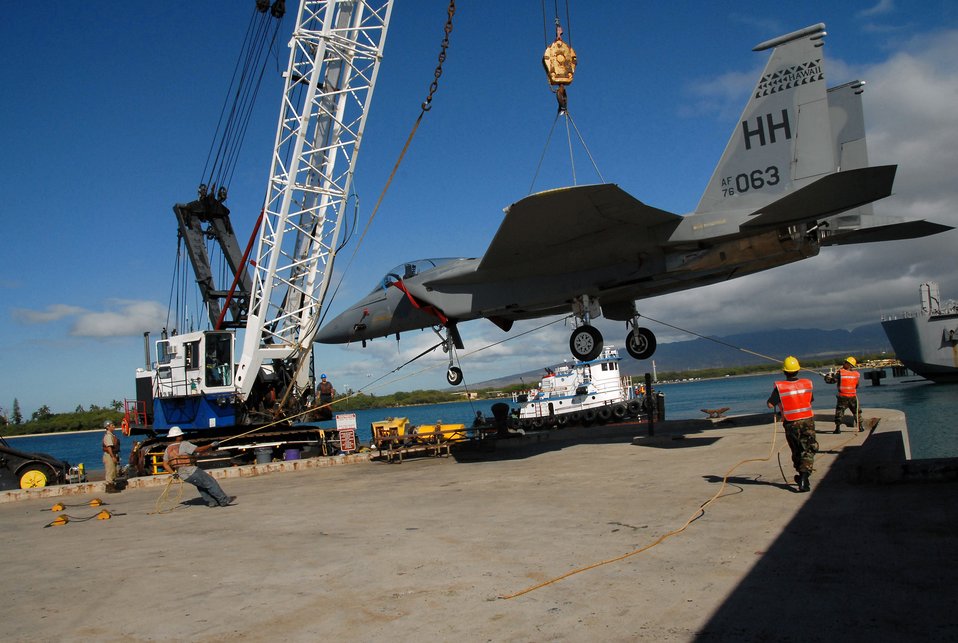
Museum bound

At Hickam Air Force Base, an F-15A Eagle from the Hawaii Air National Guard is hoisted onto a barge Aug. 26, making its way to the Pacific Aviation Museum Pearl Harbor. The fighter's history included being the